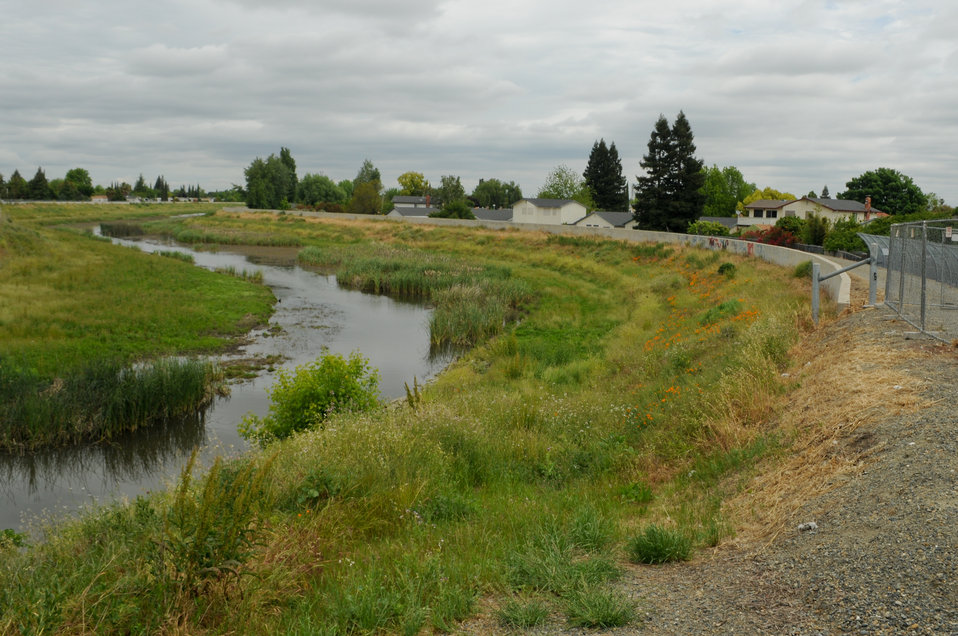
Corps begins flood wall work at Morrison Creek in south Sacramento

The existing flood wall along Morrison Creek in south Sacramento, Calif., shown May 3, 2012. Contractors for the U.S. Army Corps of Engineers Sacramento District began construction in May 2012 on a new concrete flood wall along Morrison Creek. The 3,300-foot-long flood wall will extend the existing flood wall, further reducing flood risk in the area. The work is a joint effort between the Corps, the Central Valley Flood Protection Board and the Sacramento Area Flood Control Agency. Completion is scheduled for 2013.